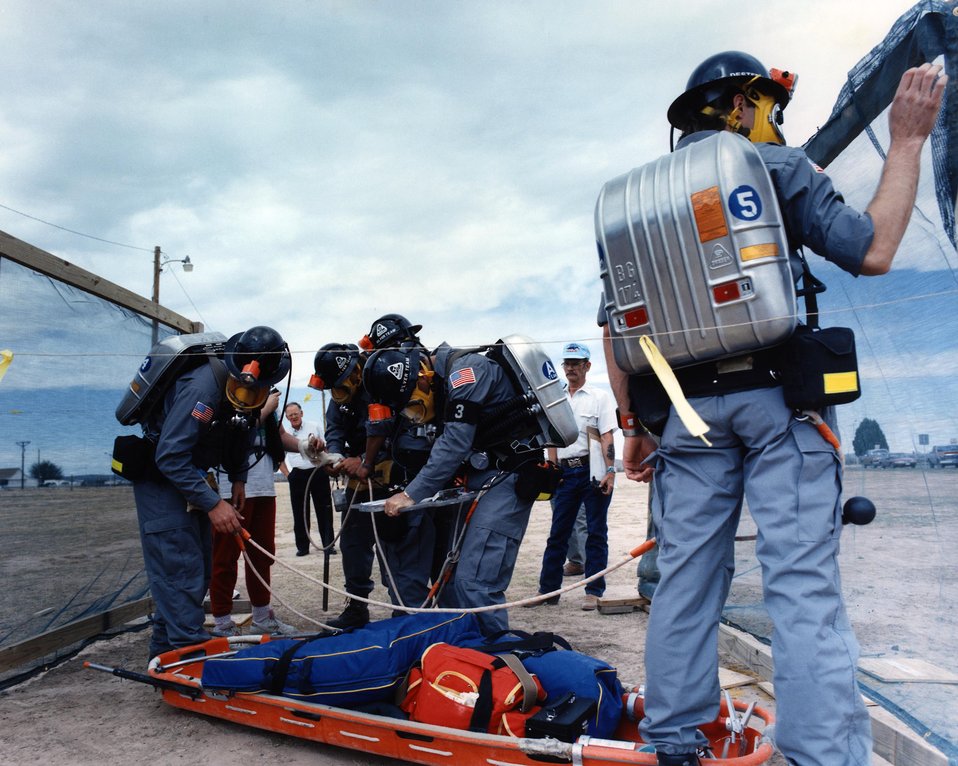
A WIPP MINE RESCUE TEAM PARTICIPATING IN A MINE RESCUE COMPETITION.

THE WIPP HAS TWO MINE RESCUE TEAMS THAT COMPETE NATIONALLY AND CONSISTENTLY PERFORM AS THE TOP TEAMS IN THE NATION. THE TEAMS UTILIZE THE COMPETITIONS TO KEEP SKILLS SHARP FOR USE ON THE JOB IF NECESSARY. THE WASTE ISOLATION PILOT PLANT, LOCATED IN SOUTHEASTERN NEW MEXICO, IS A DOE RESEARCH AND DEVELOPMENT FACILITY DESIGNED TO DEMONSTRATE THE SAFE DISPOSAL OF DEFENSE RADIOACTIVE WASTE IN ANCIENT SALT BEDS.